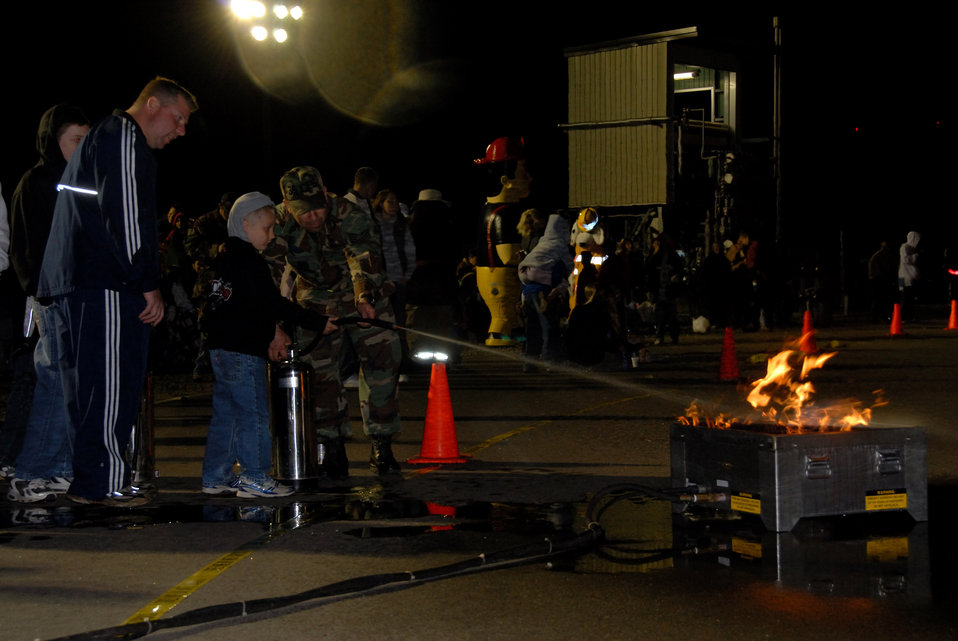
Blazing demonstration

Navy Senior Chief Petty Officer Joseph Varcasia and his son, Douglass, are shown how to properly use a fire extinguisher by Staff Sgt. Andres Steevens during Fire Prevention Week Oct. 9 at Misawa Air Base, Japan. The 35th Civil Engineer Squadron fire department annually demonstrates firefighting procedures for base residents. Senior Chief Varcasia is from the Aircraft Intermediate Maintenance Detachment, and Sergeant Steevens is from the 35th CES.